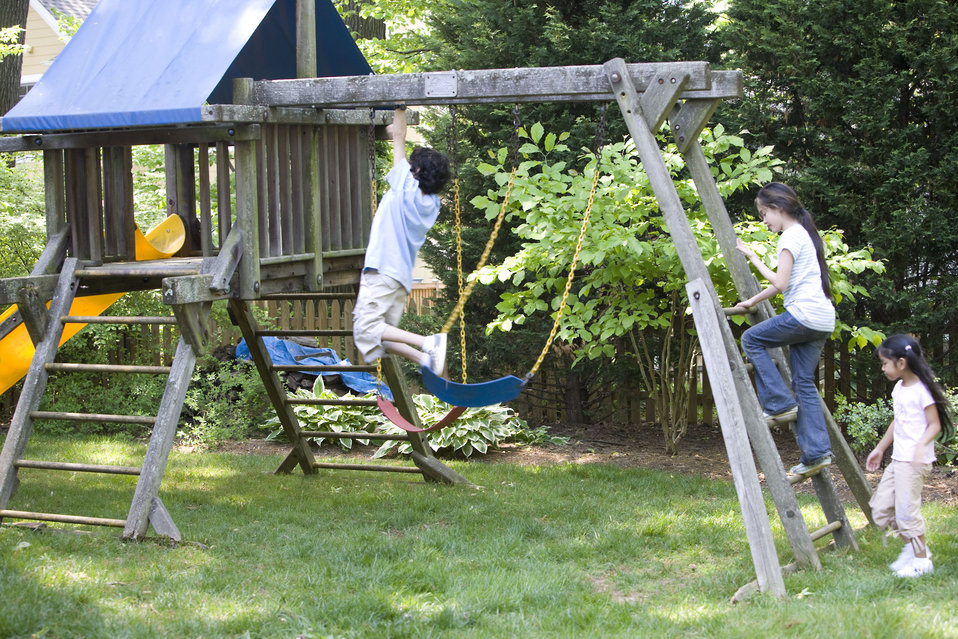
Children love playing outside, and these children were thoroughly enjoying their wooden swing set, and all were having fun in the fresh outdoor air, and the beautiful weather. It's important to note that older wooden playsets may have been treated with arsenic and/or creosote, and therefore, parents need to know if these chemicals were used in their manufacture.